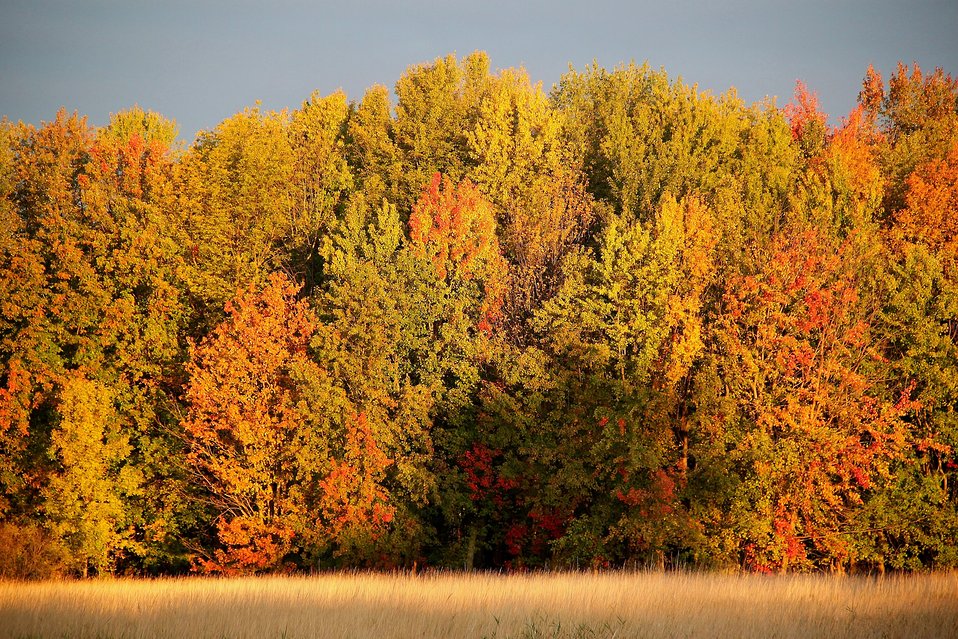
Fall foliage at Missisquoi National Wildlife Refuge

Fall Foliage-Missisquoi National Wildlife Refuge